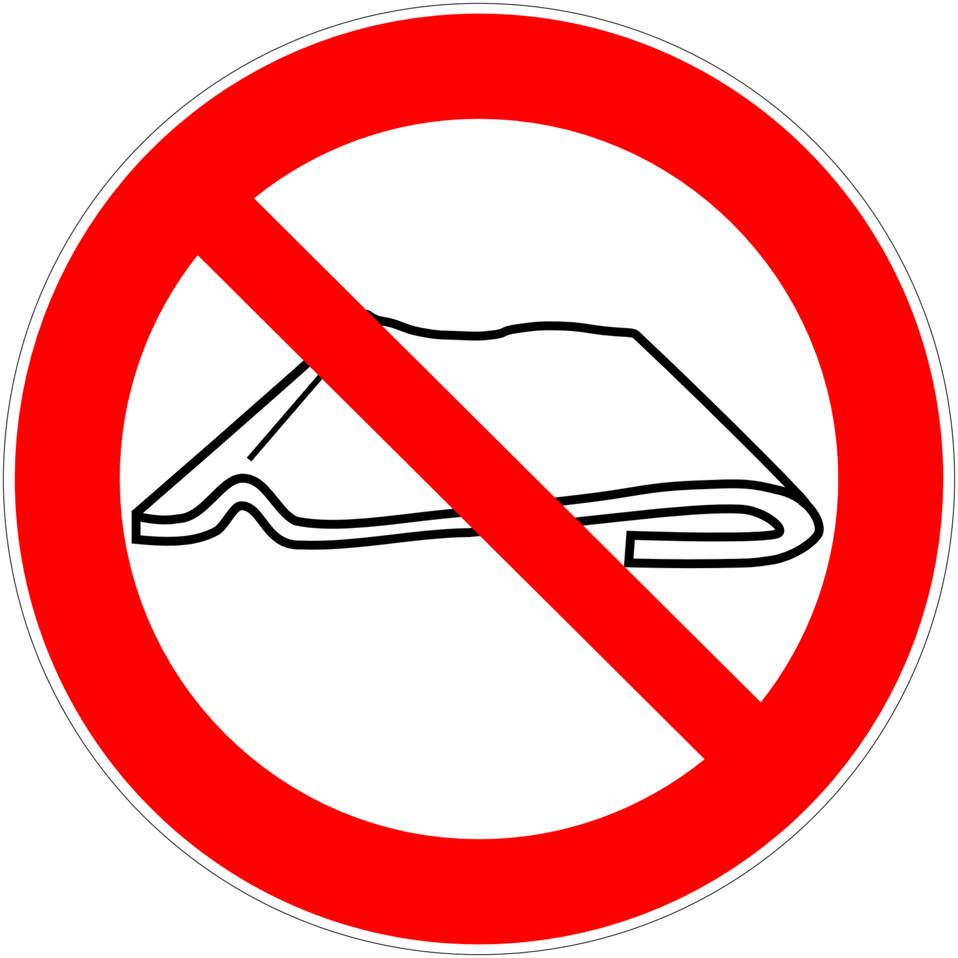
Deutsch: Nicht falten oder zusammenschieben, Verbotszeichen D-P034 nach DIN 4844-2 Do not fold or crumple, prohibition sign D-P034 according to German standard DIN 4844-2